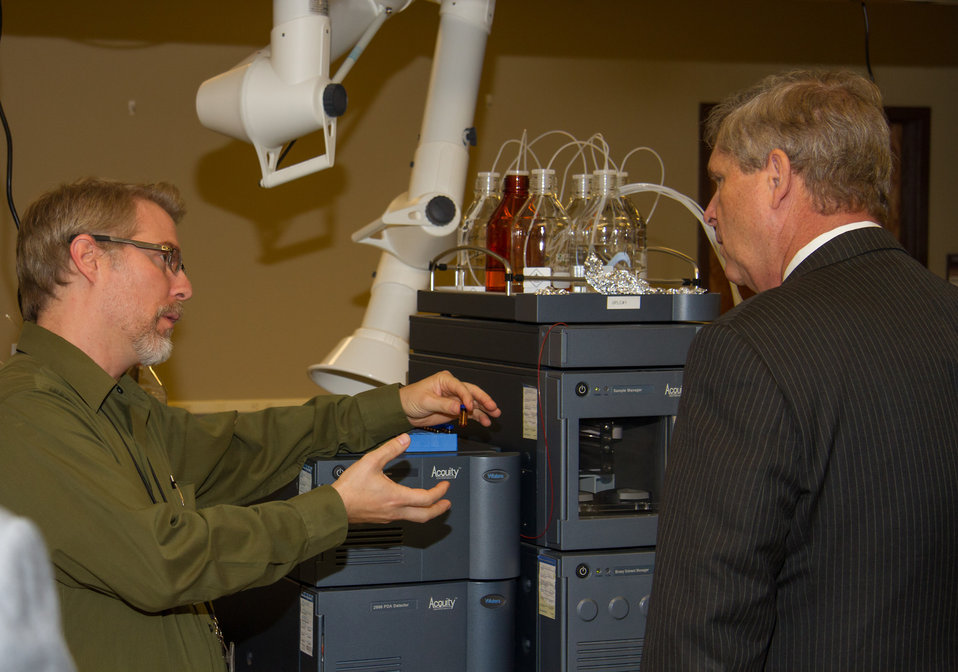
Tom Weber, (l), Leader of Grain Inspection, Packers and Stockyards Administration (GIPSA) Trace Analysis Laboratory, shows Agriculture Secretary Tom Vilsack the tiny capsules in which extracts of grain samples are placed prior to analysis by High Performance Liquid Chromatography in Kansas City, MO, on Wednesday, Oct. 23, 2013. .